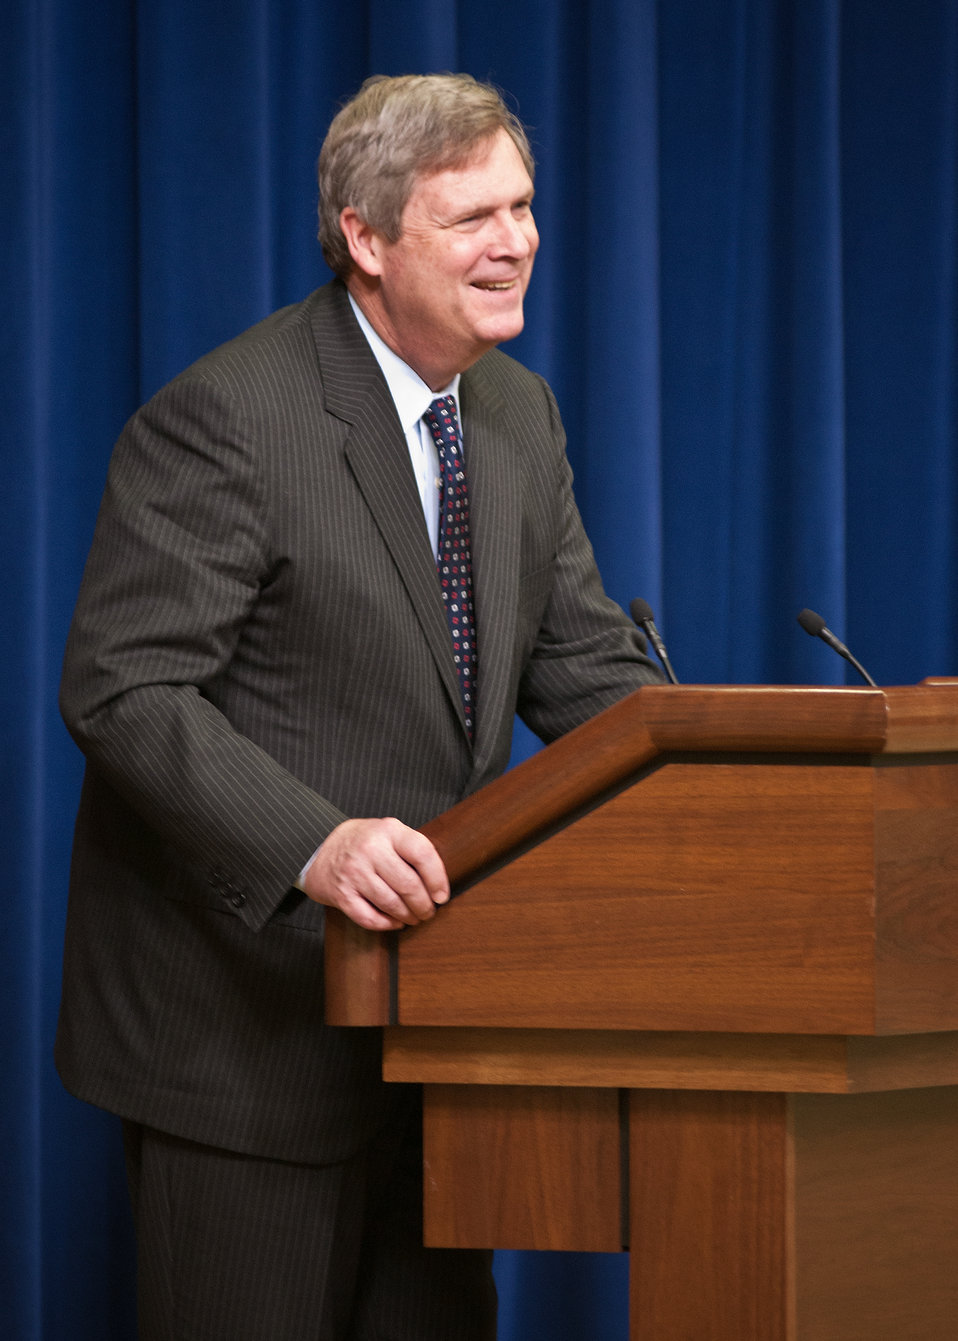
Agriculture Secretary Tom Vilsack shares a laugh with the audience at the 11th Annual Meeting of State Agriculture and Rural Leaders at the Eisenhower Executive Office Building in Washington, D.C., on Friday, January 6, 2012. Secretary Vilsack and members of his subcabinet, Dr. Elisabeth Hagen, Undersecretary, Food Safety, Dr. Catherine Woteki, Chief Scientist, Undersecretary, Research Education and Economics, Dave White, Chief, Natural Resources Conservation Service and Doug O’Brien, Deputy Undersecretary, Rural Development. Secretary Vilsack and his cabinet members discussed a variety of agriculture and rural development topics affecting rural America.